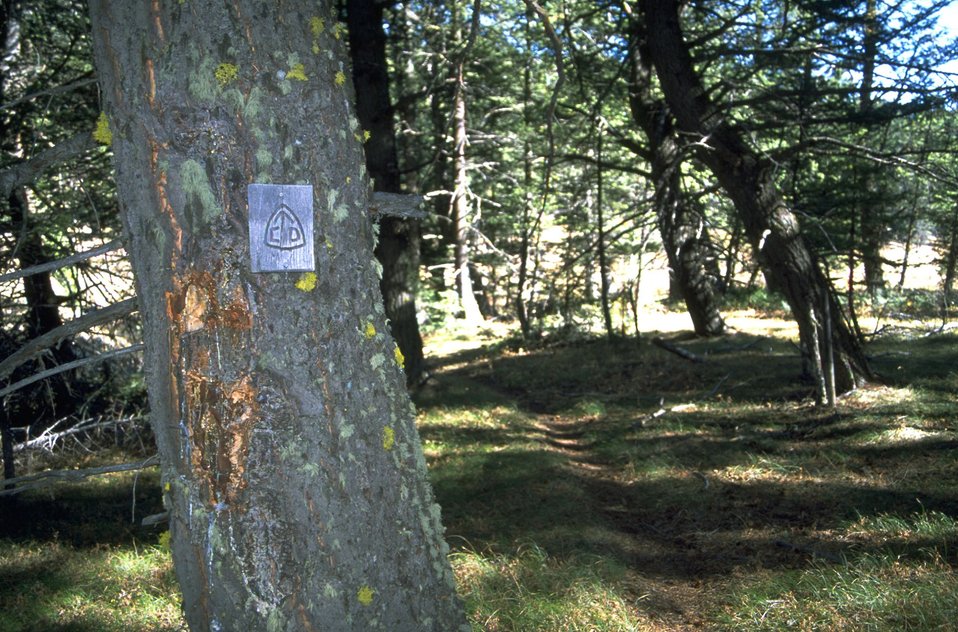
Blaze on tree. Continental Divide Trail sign adjacent to trail